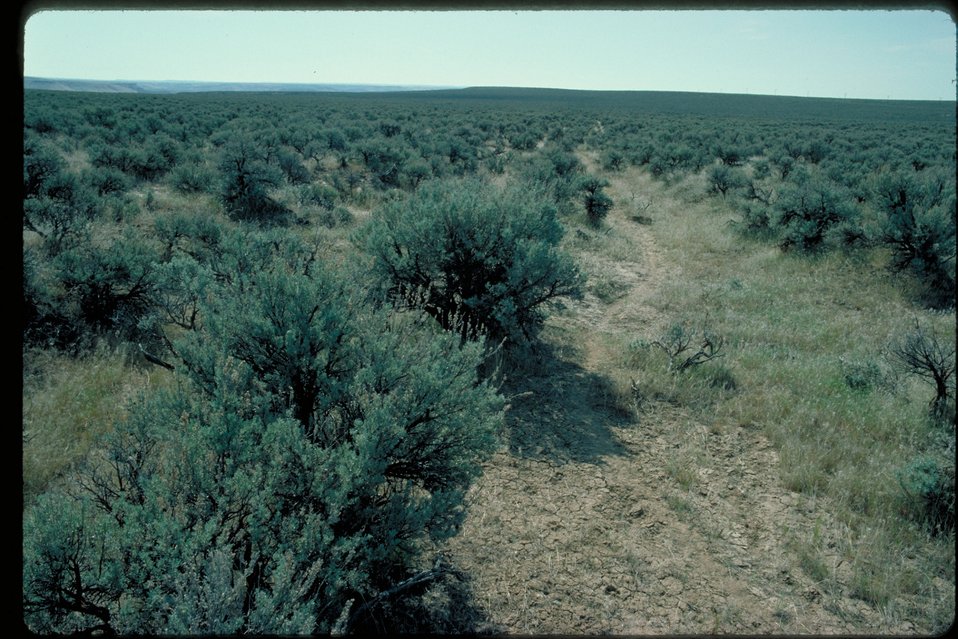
Oregon Trail between Glenns Ferry and Alkali Creek Lower Snake River District